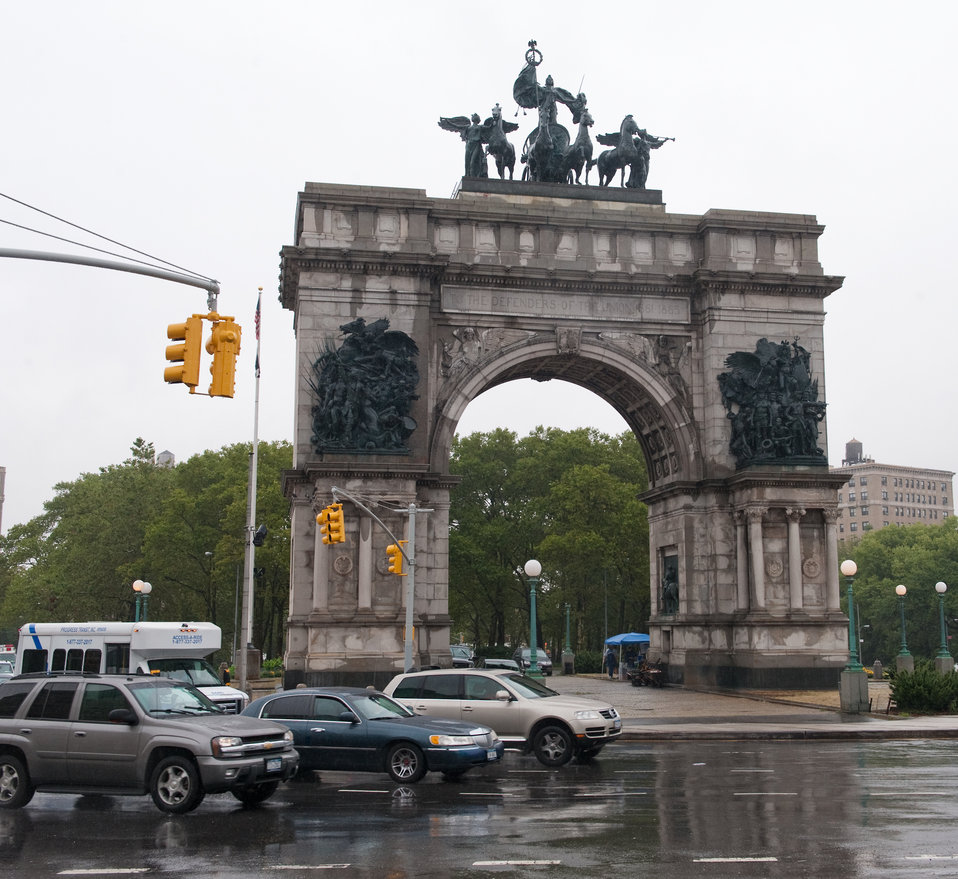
Air Force Week - Volunteer Day

A constant rain falling on the Soldiers and Sailors Memorial Arch could not deter 34 Airmen who participated in the cleanup of the Grand Army Plaza in Prospect Park, as part of Air Force Week New York's Volunteer Day Aug. 25, 2010, in Brooklyn, N.Y.